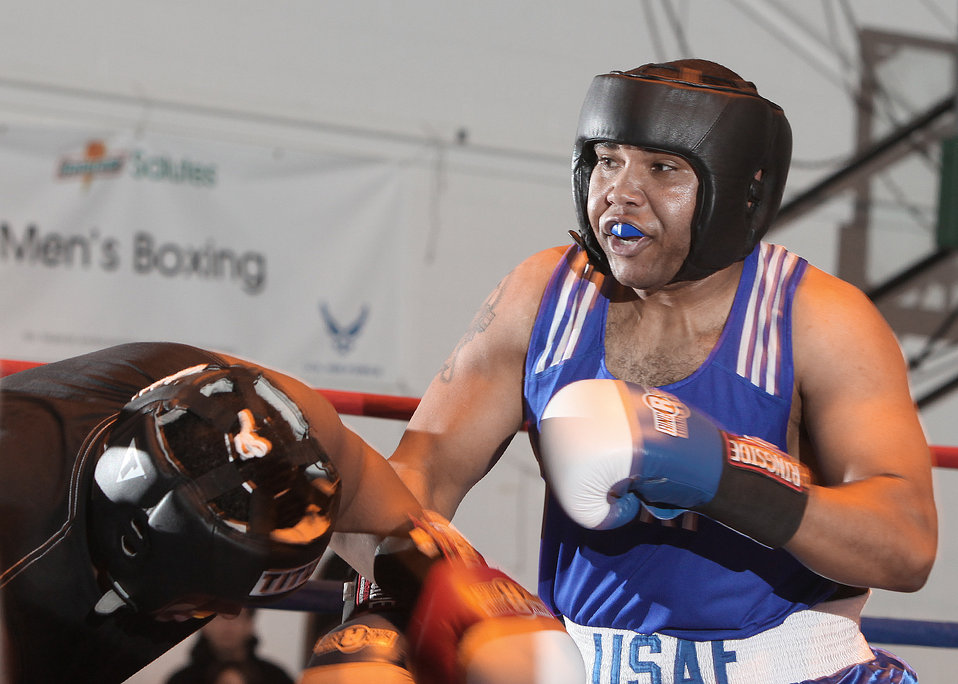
Air Force Box-offs

Super heavyweight Forrest Booker (right) knocks down his civilian opponent during the Air Force Box-off tournament Jan. 22, 2011, at Lackland Air Force Base, Texas. In his first official amateur contest, Booker stopped his opponent in the first round. Booker is from Royal Air Force Alconbury, England.